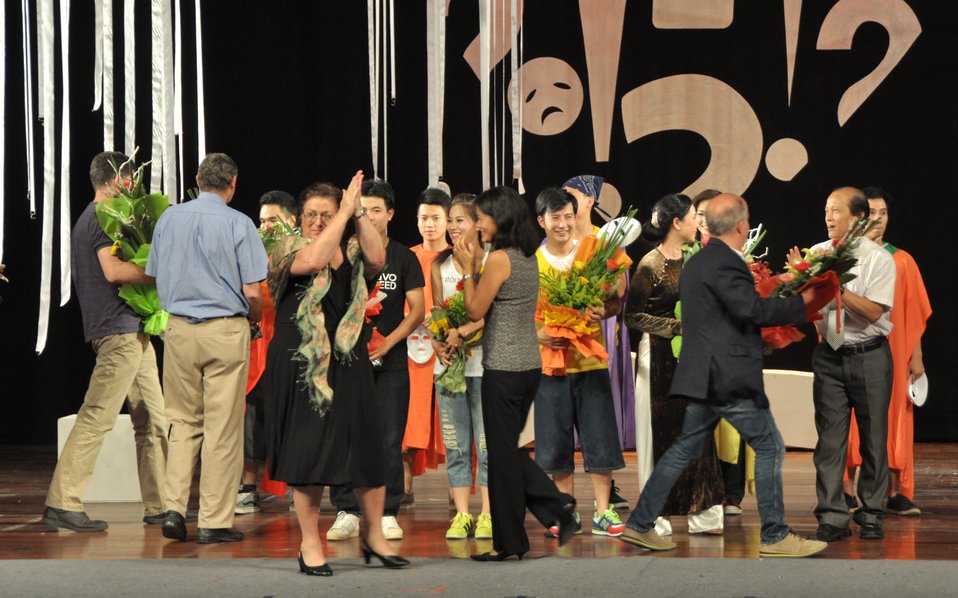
PEPFAR Musical Questions and Exclamations